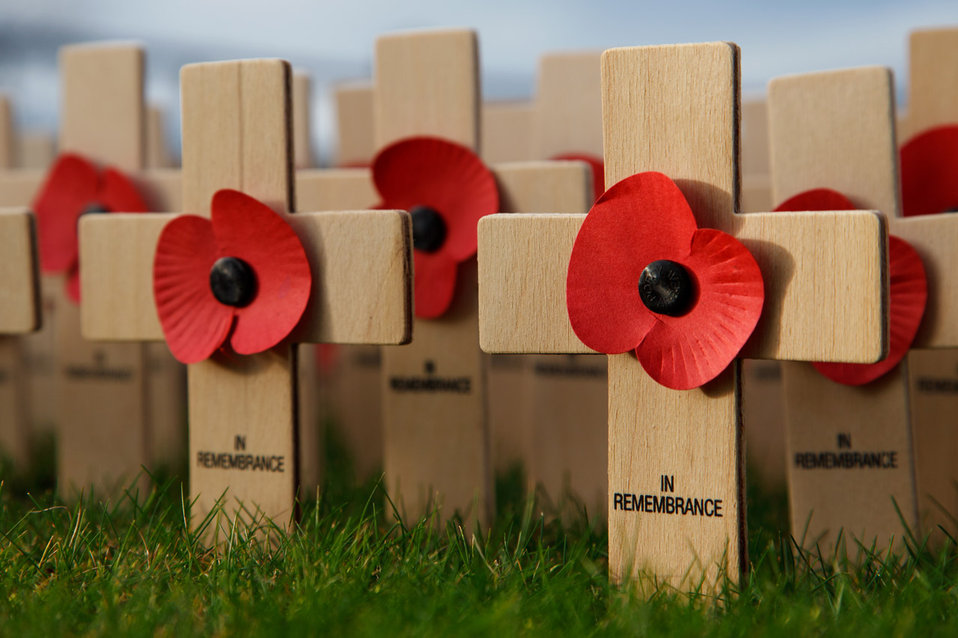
Remembrance day

Crosses with red poppy flowers.